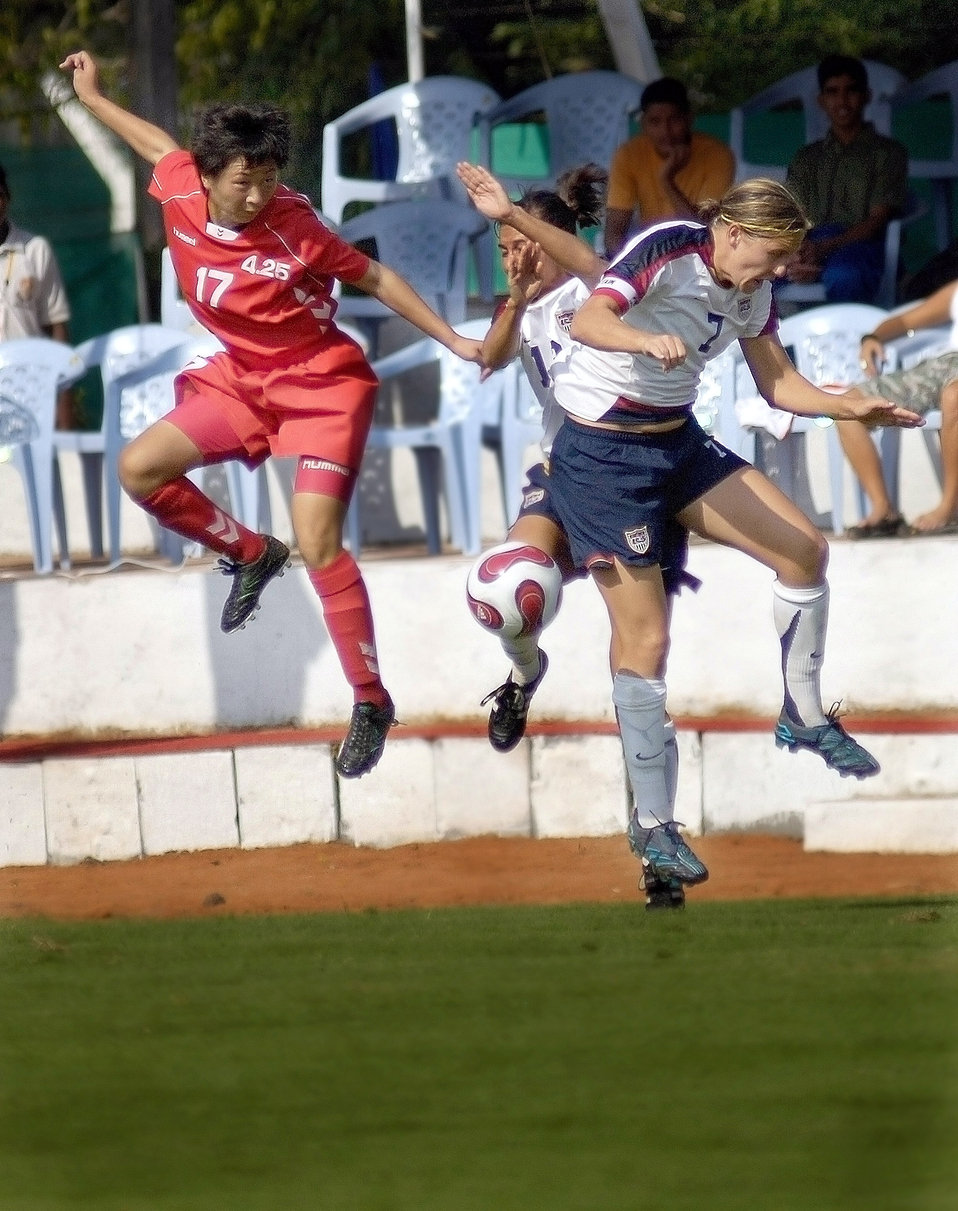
4th CISM World Military Games

First Lt. Ill Ok Jang from the Democratic Peoples Republic of Korea, U.S. Army Capt. Emily Nay and U.S. Air Force Capt. Wendy Emminger all scramble for the soccer ball during the first women's soccer match of the Military World Games in Hyderabad, India, Oct. 14. DPR Korea defeated the U.S. team 4-0. The Conseil Internationale du Sport Militaire's Military World Games event is the largest international military Olympic-style event in the world. In this year's fourth edition of the games, 103 countries and more than 5,000 athletes are competing Oct. 14 to 21 in boxing, diving, soccer, handball, judo, military pentathlon, parachuting, sailing, shooting, swimming, volleyball and track and field. The purpose of the Military World Games is to promote